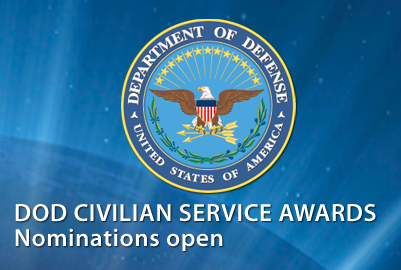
DOD civilian awards